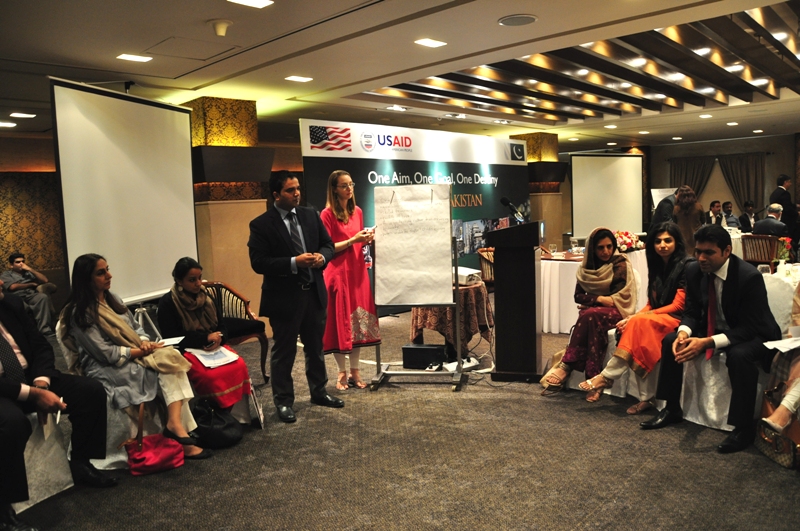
Education Workshop 235